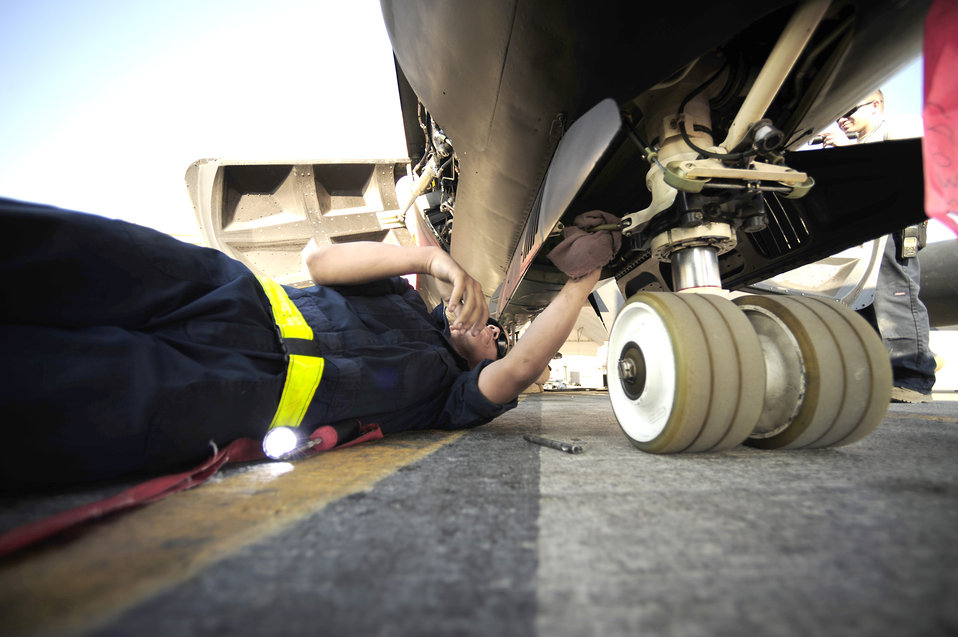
Technicians work on the Dragon Lady

Airman 1st Class Colin Cortez checks the undercarriage on a U-2 Dragon Lady Nov. 23, 2010, at an air base in Southwest Asia. Airman Cortez is a U-2 crew chief assigned to the 380th Expeditionary Aircraft Maintenance Squadron.